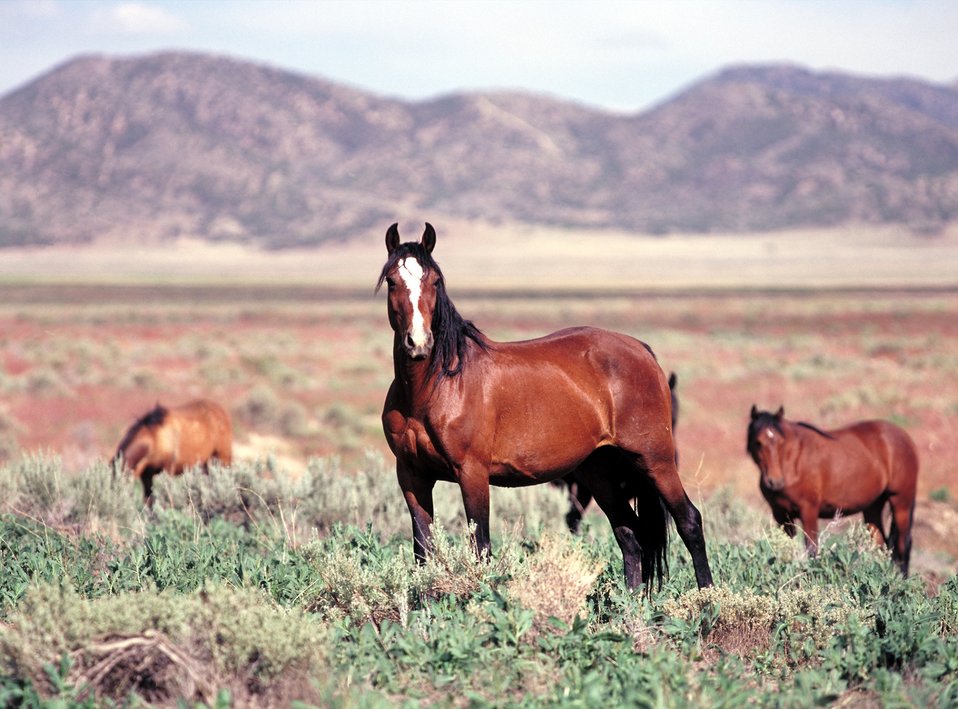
Onaqui Herd near Dugway, Utah.